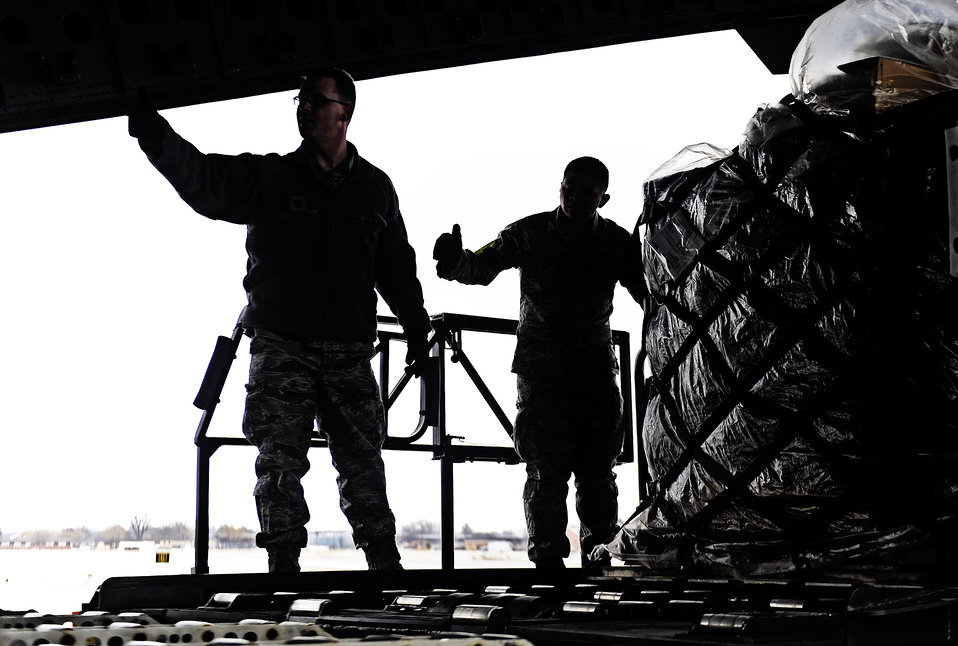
Humanitarian aid

Airmen from the 375th Logistics Readiness Squadron give loadmasters the ‘all clear’ to move the final pallet onto a C-17 Globemaster III Feb. 7, 2011, at Scott Air Force Base, Ill.